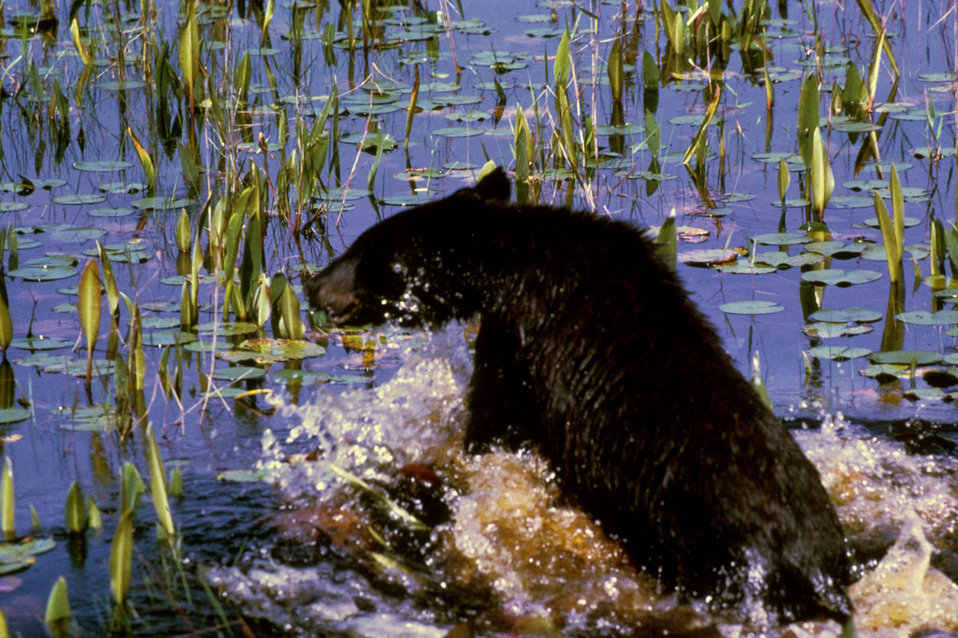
Black Bear Cub.